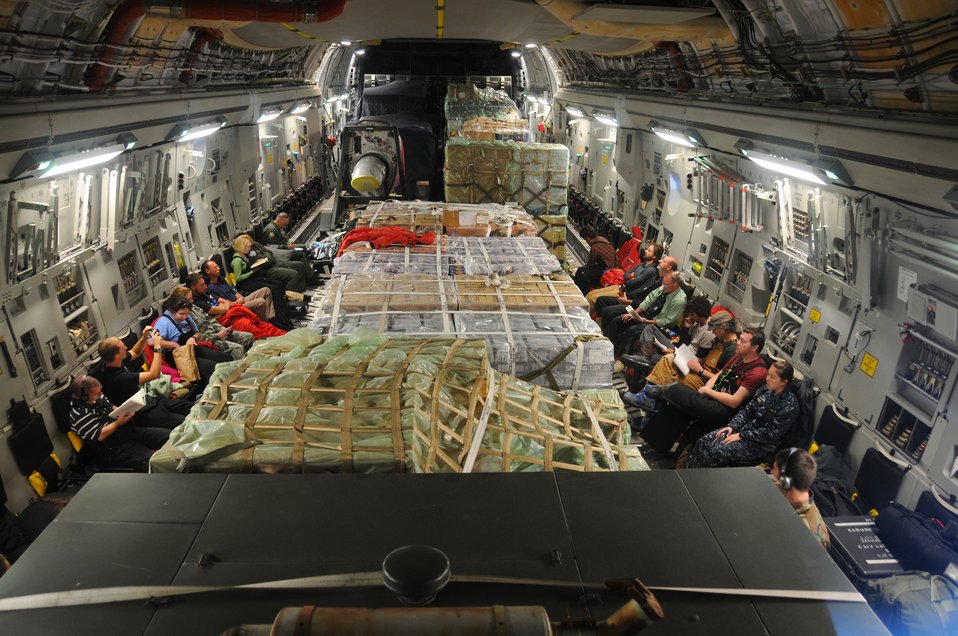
C-17s support Operation Deep Freeze

Passengers sit amongst the cargo aboard a C-17 Globemaster III Dec. 25, 2010, during a flight from Christchurch, New Zealand, to McMurdo Air Station, Antarctica. The aircraft is assigned to the Air Force Reserve Command’s 728th Airlift Squadron at McChord Air Force Base, Wash. The flight was turned around as bad weather made it too difficult to land in Antarctica.